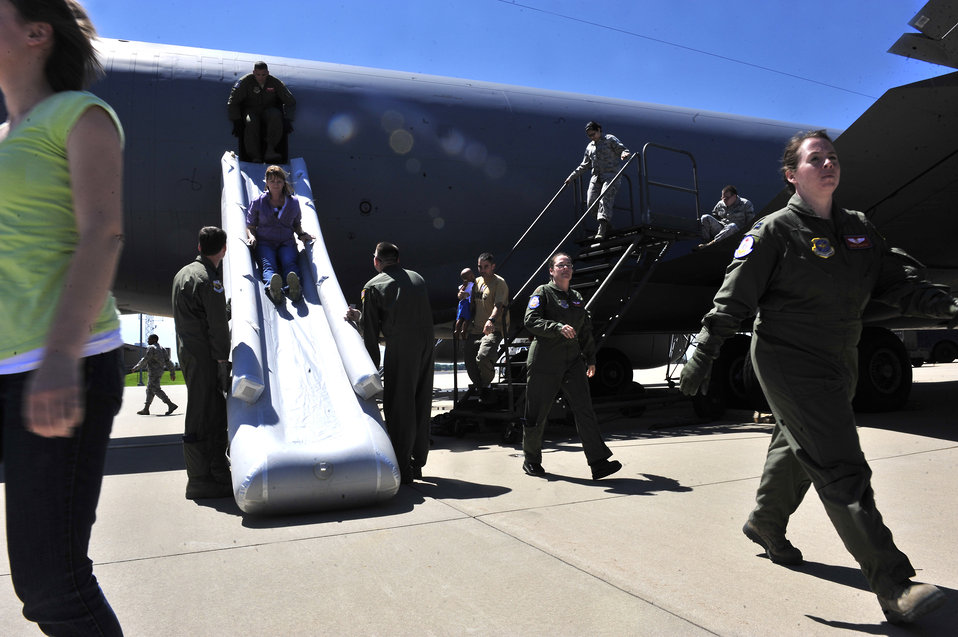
Egress exercise

Passengers evacuate a KC-135 Stratotanker June 28, 2011, during an egress scenario at Scott Air Force Base, Ill.